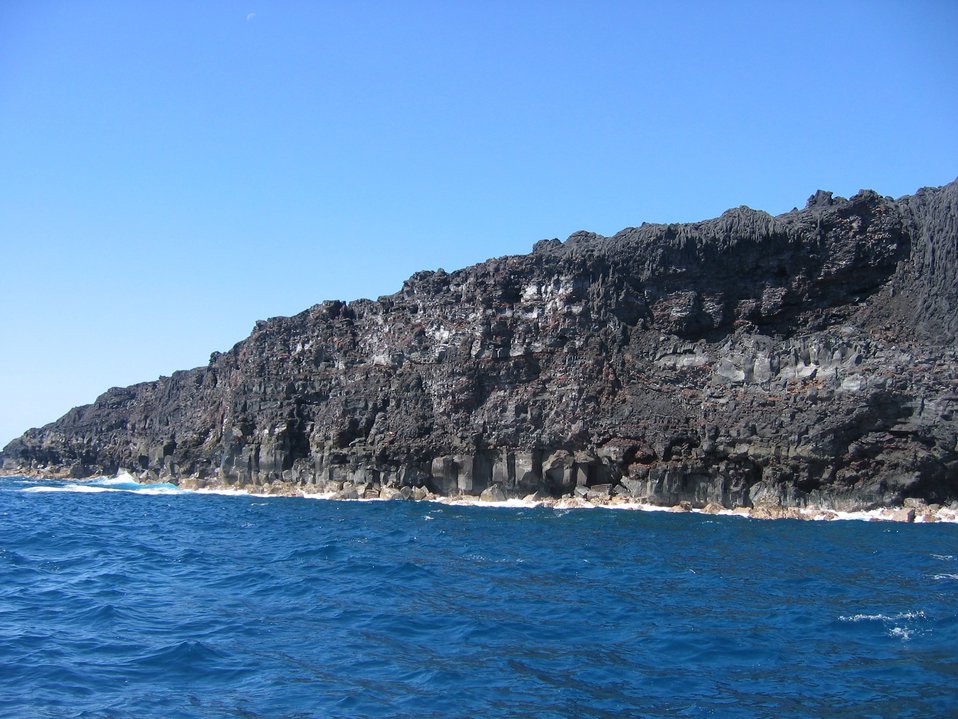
Recently cooled lava where it meets the sea near South Point of Hawaii.